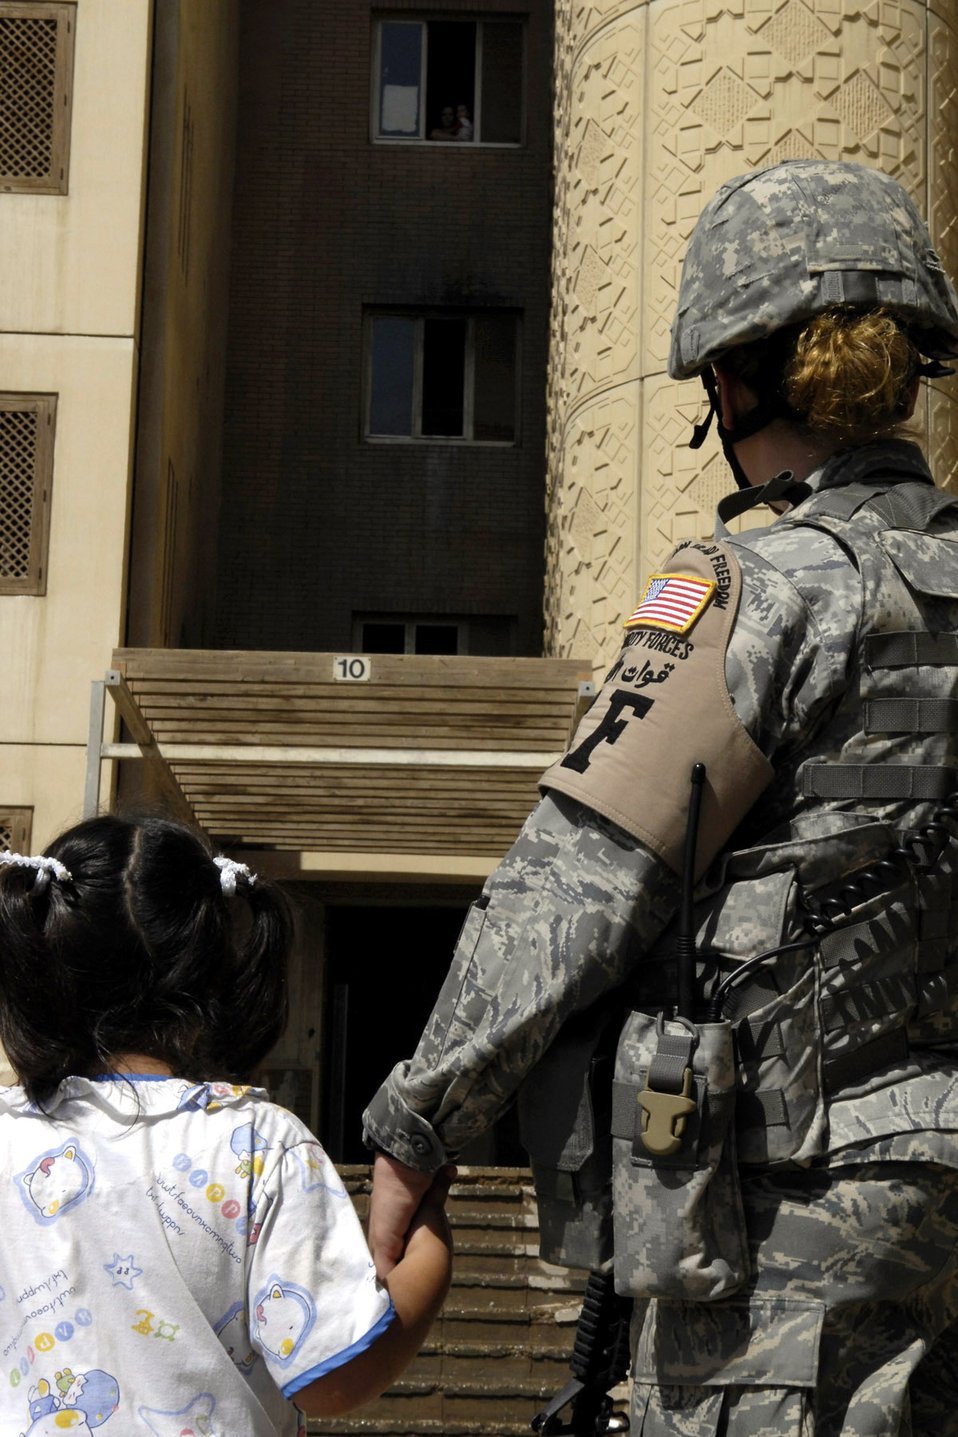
Airmen patrol the streets of Baghdad

Airman 1st Class Jessica Gallaway, deployed from Grand Forks Air Force Base, N.D., assigned to the 732nd Expeditionary Security Forces Squadron, Det. 4, holds an Iraqi girl's hand as they wait to return her to her apartment after a fire. Air Force security forces are the first responders for the international zone, Baghdad, Iraq. They are in-lieu-of tasking, meaning they are filling an Army billet on six-month deployments.